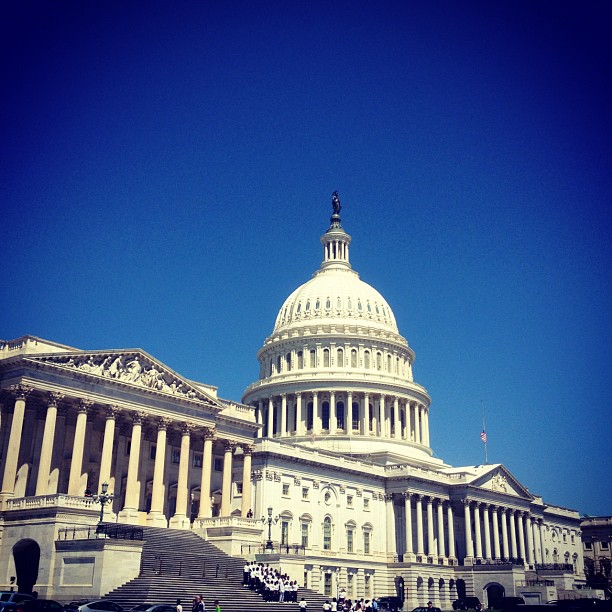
Perfect blue sky and great weather enjoy @marineband tonight 8pm at Capitol.